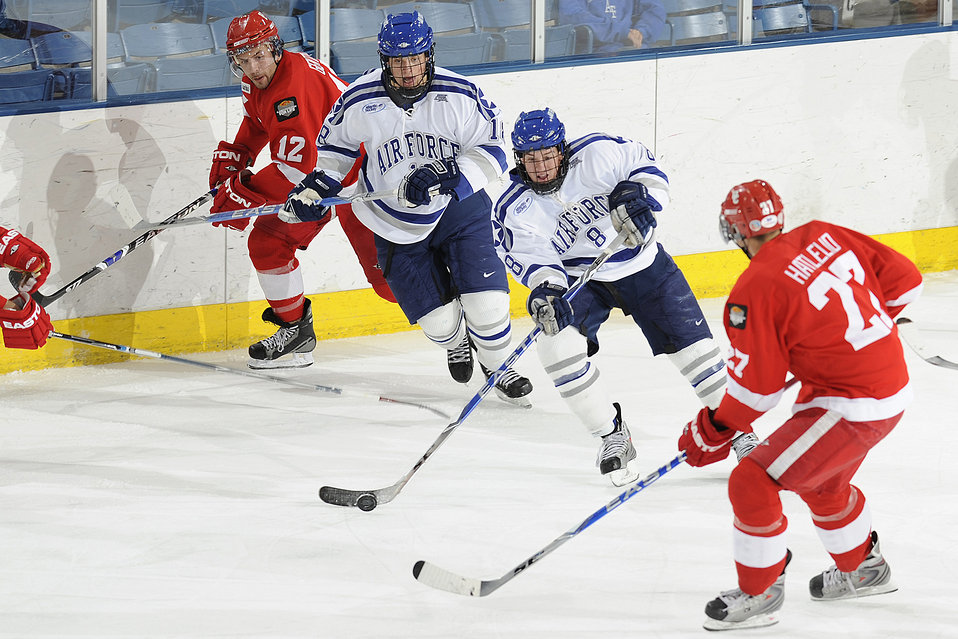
Lamoureux scores two in 3-1 win over Calgary

U.S. Air Force Academy, CO -- Junior forward Scott Kozlak tries to outmaneuver Calgary defender Dustin Hatlelid during the Falcons-Dinos exhibition game at the Cadet Ice Arena Oct. 5. The Falcons won the match on two goals by junior forward Jacques Lamoureux. Kozlak is a native of Duluth, Minn.